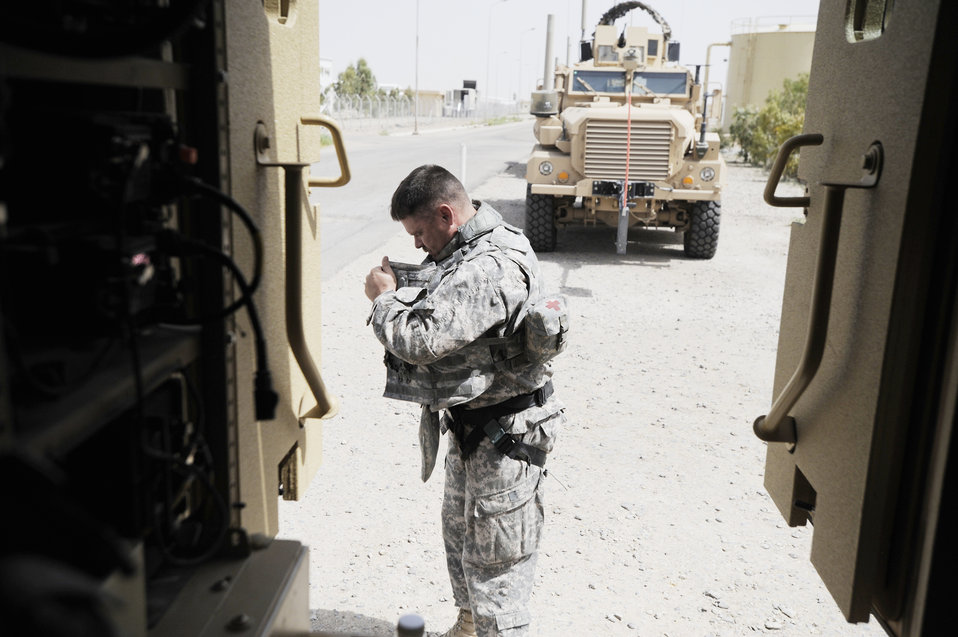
Airmen help Iraqi army take control of base operations

Lt. Col. Steven Ramsay dons a harness in preparation for a convoy to Contingency Operating Base Adder, Iraq, from Camp Ur, an Iraqi military base Aug. 17, 2009. Colonel Ramsay, deployed from Keesler Air Force Base, Miss., and his team advise their Iraqi military counterparts on base operations. Colonel Ramsay is the Logistics Military Advisory Team senior adviser.